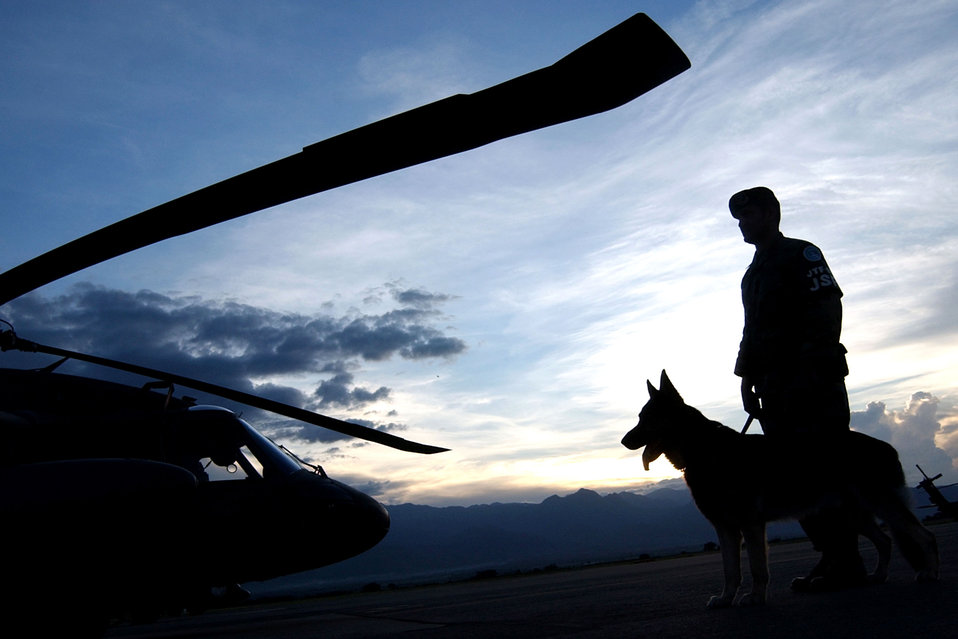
Standing guard

Staff Sgt. Rafael Melendez and Hoston patrol the flightline at Soto Cano Air Base, Honduras, Aug. 2. Sergeant Melendez and his military working dog provide direct support to Joint Task Force - Bravo and U.S. customs to prevent the illegal use and transport of narcotics through Central America.